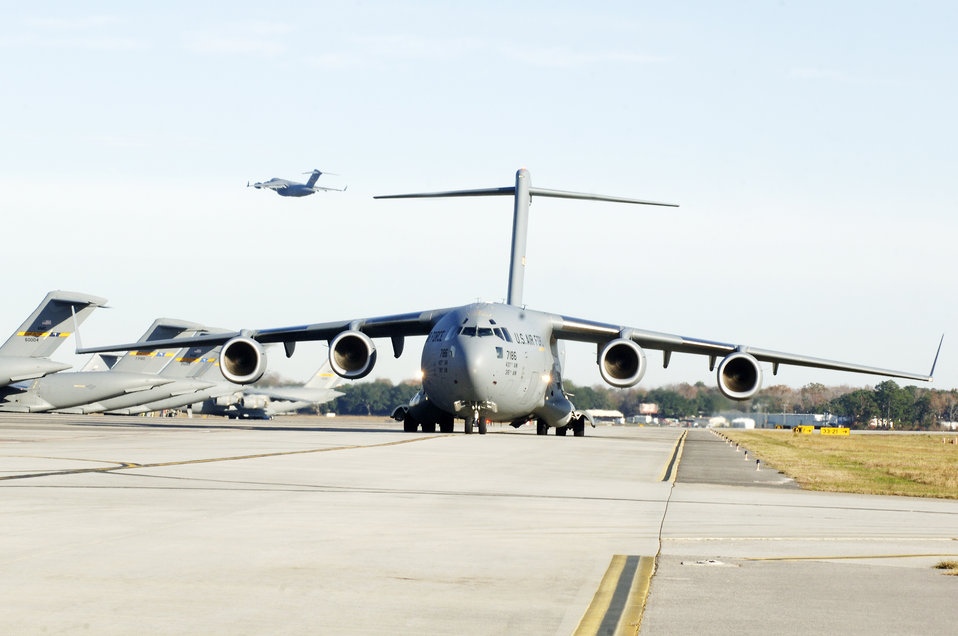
Airmen, Soldiers participate in Operation Thunderstruck

A C-17 Globemaster III from Charleston Air Force Base, S.C., takes off as another C-17 taxis in preparation for a strategic brigade airdrop exercise over North Auxiliary Airfield Dec. 16, 2009, near North, S.C., demonstrating the global projection of U.S. airpower. Charleston AFB Airmen conducted a large formation exercise utilizing 10 C-17 aircraft. Soldiers from the 2-319th Airborne Field Artillery, 82nd Airborne Division at Ft. Bragg, N.C., were airdropped along with cargo pallets to simulate the seizure of a remote airfield.